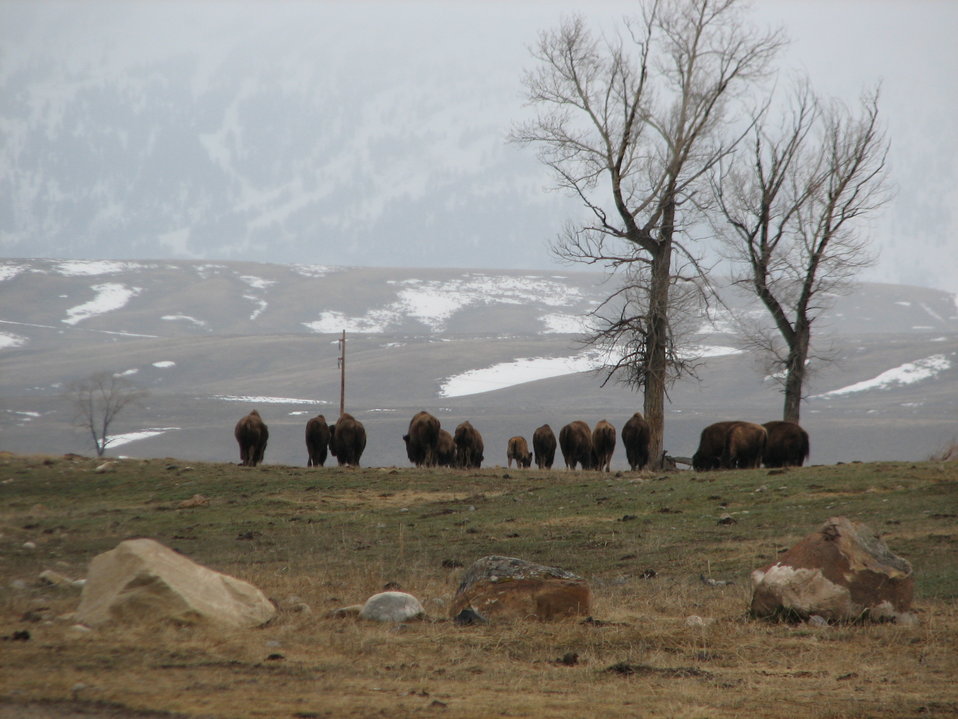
Bison on the National Elk Refuge

Much of the Jackson bison herd uses the National Elk Refuge as winter range.